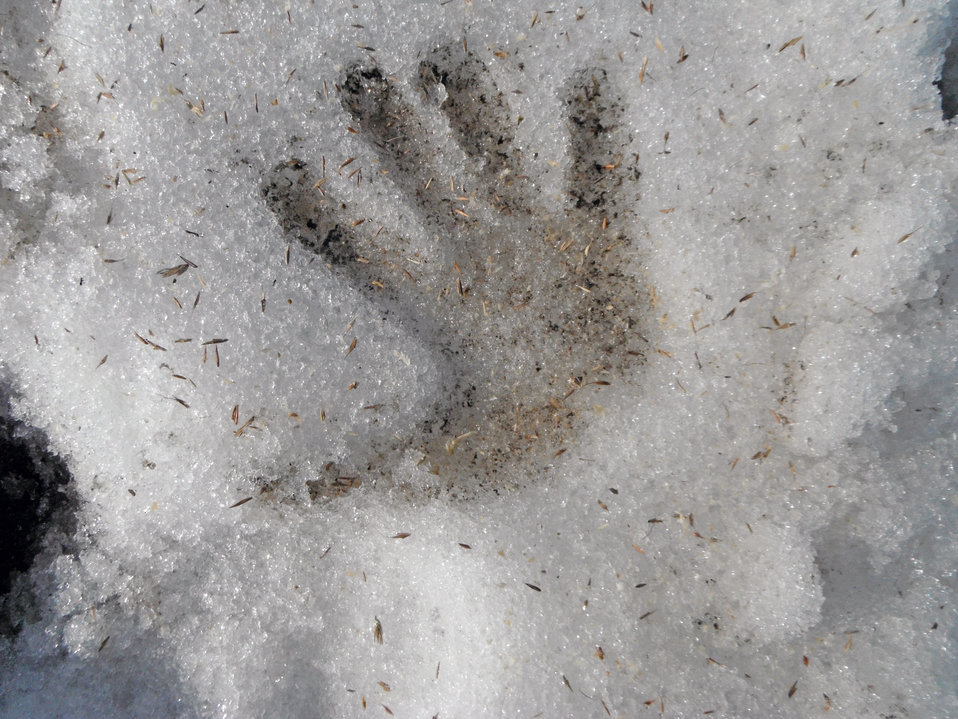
Hands that Sow

Twenty-one youth and adults lent a hand in creating a new prairie restoration and outdoor classroom at Kennedy Secondary School in Fergus Falls, Minnesota.